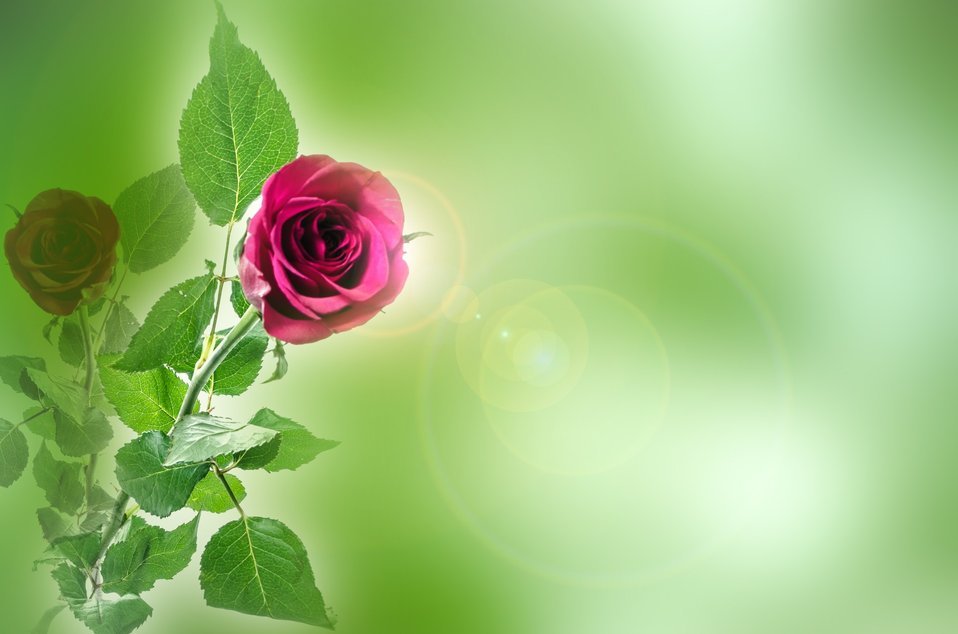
Flower

Rose on the green background.